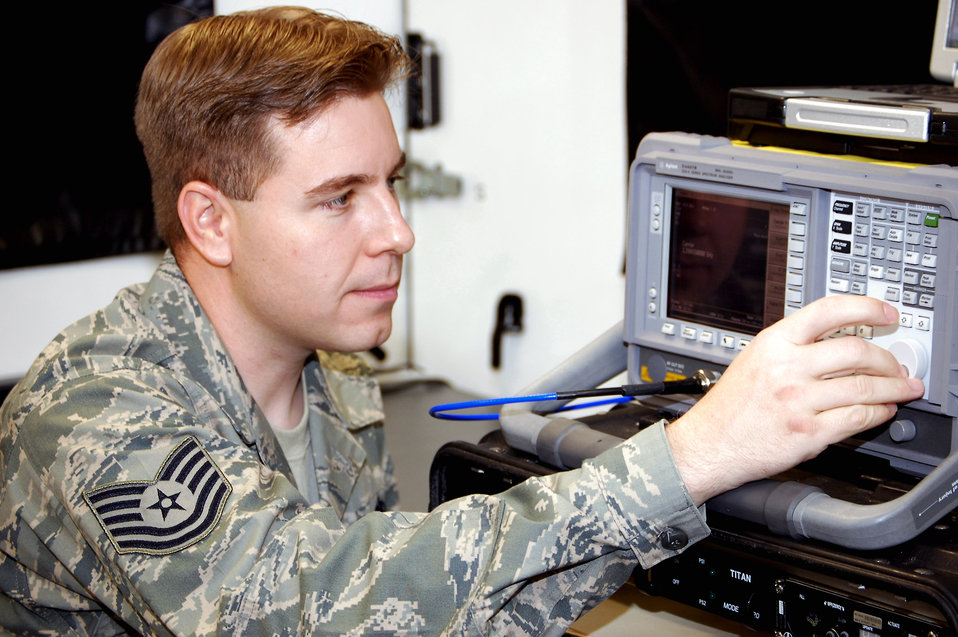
Expeditionary Center adding 'SPICE' to its curriculum

Tech. Sgt. Adrian McDonough prepares equipment in a Small Package Initial Communications Element package for use in the Mobility Operations School's mobile command, control and communications training facility on the expeditionary center campus Oct. 29 at Fort Dix, N.J. The SPICE Course is a new course in the MOS starting in February 2009. Sergeant McDonough is the course director for the U.S. Air Force Expeditionary Center's SPICE Course.